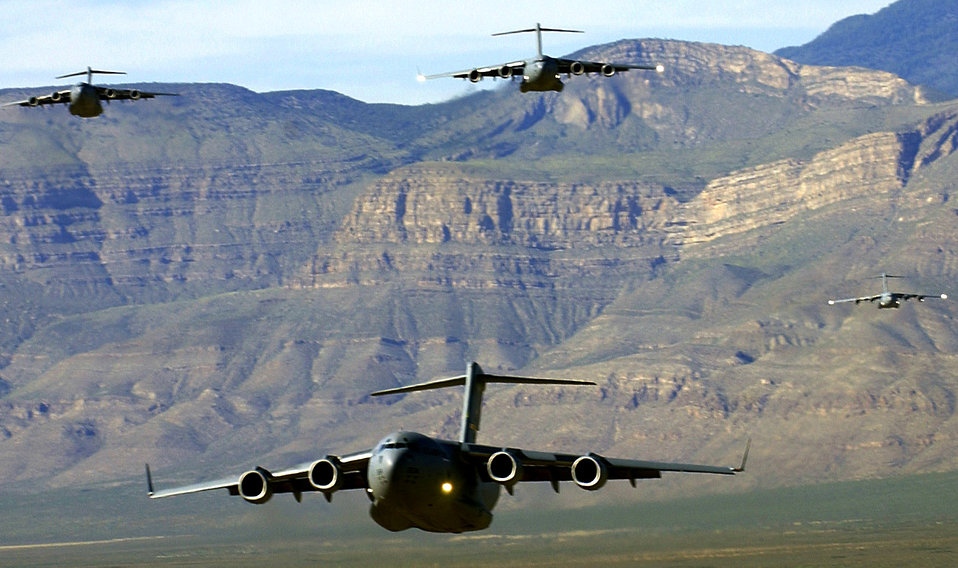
C-17 Ship formation

OVER TEXAS (AFPN) -- C-17 Globemaster IIIs fly in a formation. The flight from Charleston Air Force Base, S.C. to Biggs Army Air Field, Texas was the largest C-17 formation ever to fly across the country.